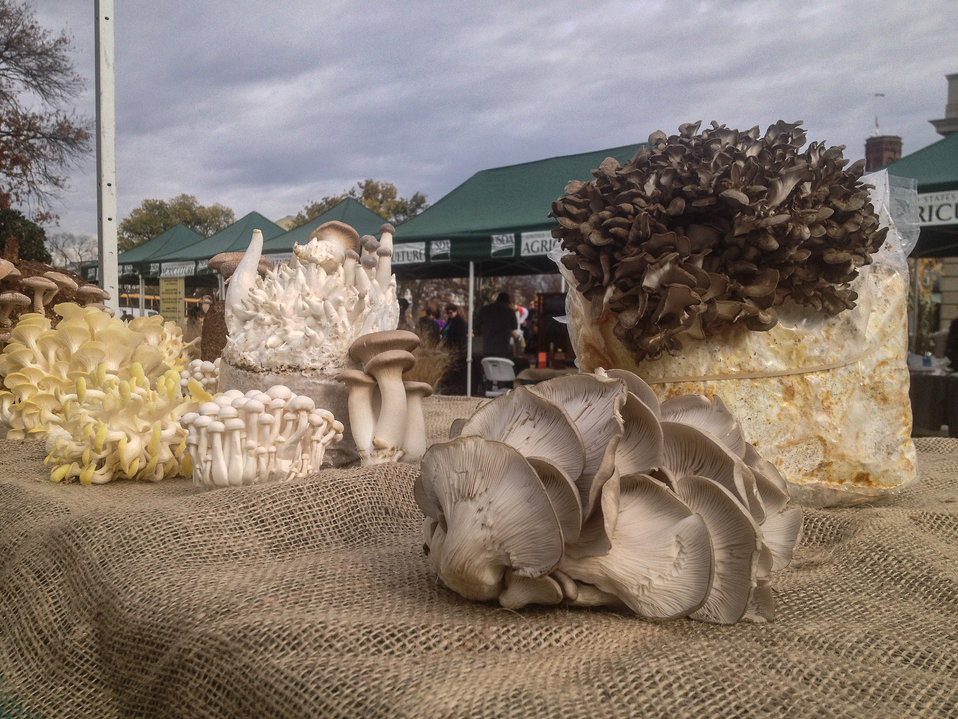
Yellow oyster (yellow and white), pom pom (egg shaped), beach (small cap), royal trumpet (large stem), maitake (dark brown on plastic wrapped growing log, and oyster (light gray) mushrooms on display at the U.S. Department of Agriculture (USDA) farmers markets and Harvest Festival at the USDA Whitten Building east parking lot in Washington, DC, on Friday, November 22, 2013.